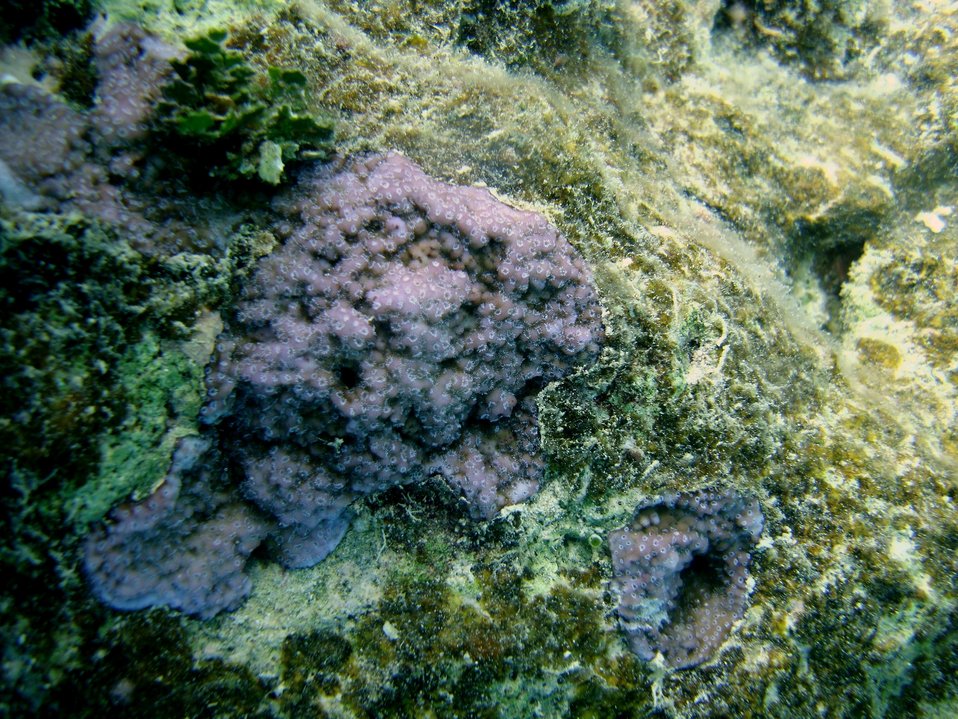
Acroporidae coral Montipora sp.